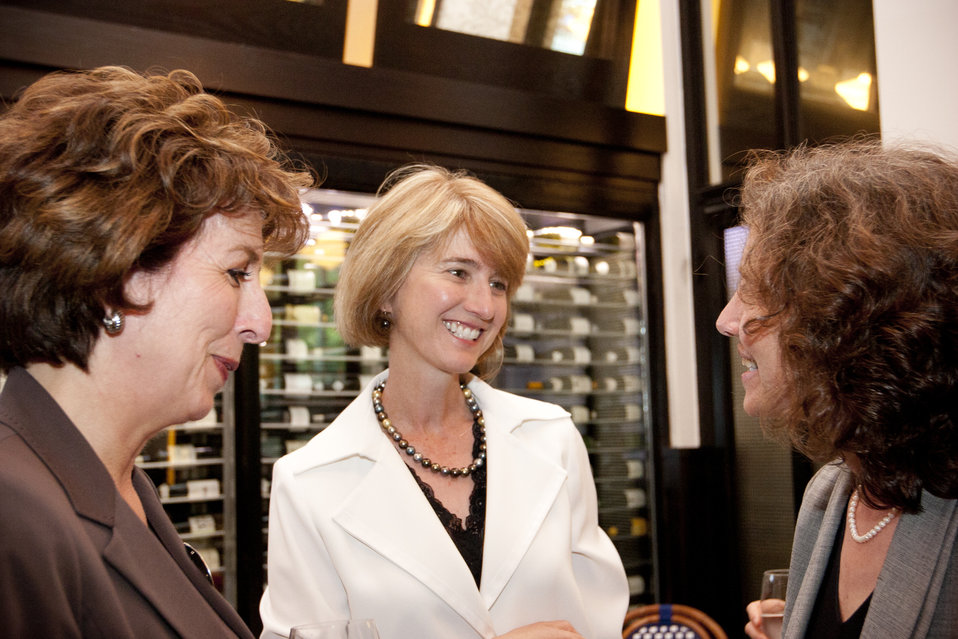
WomenandEnergy 12